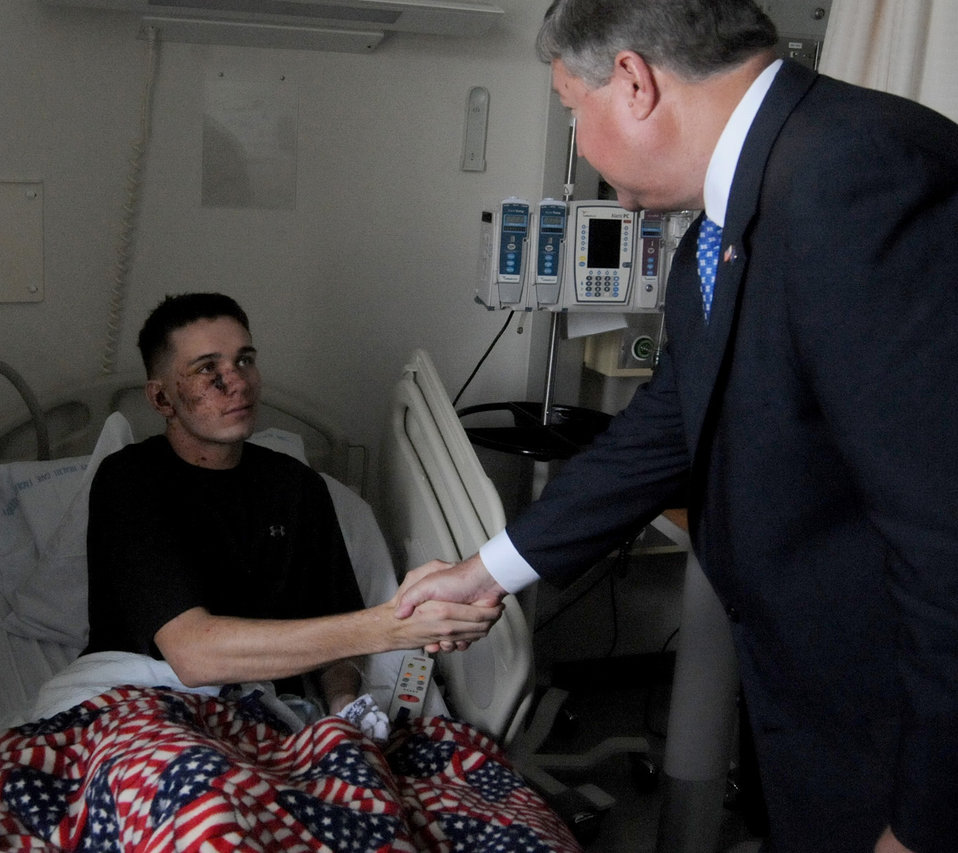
SecAF at Ramstein

Secretary of the Air Force Michael Donley visits Marine Lance Cpl. Jeremiah Rardin June 18, 2011, at Landstuhl Regional Medical Center, Germany. Lance Corporal Rardin is being treated for injuries sustained while deployed to Afghanistan.